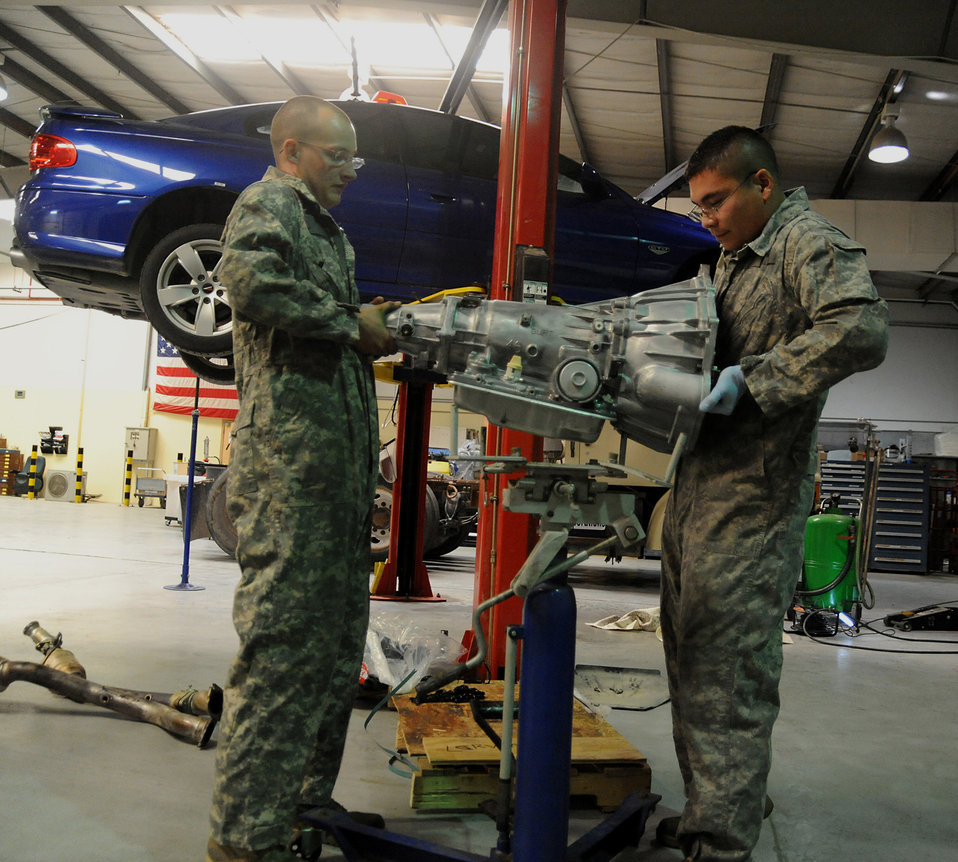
Let's get it started

Senior Airman Adam Owens and Senior Airman Michael Jakubec lift a transmission onto a transmission jack so it can be raised into a Pontiac GTO April 26 at an air base in Southwest Asia. The GTO is used as a chase car to help guide U-2 pilots during takeoffs and landings. Airman Owens is deployed from the 174th Air National Guard Base at Hancock Field, N.Y. Airman Jakubec is deployed from Kadena Air Base, Japan. Airmen Owens and Jakubec are 380th Expeditionary Logistics Readiness Squadronvehicle maintainers.